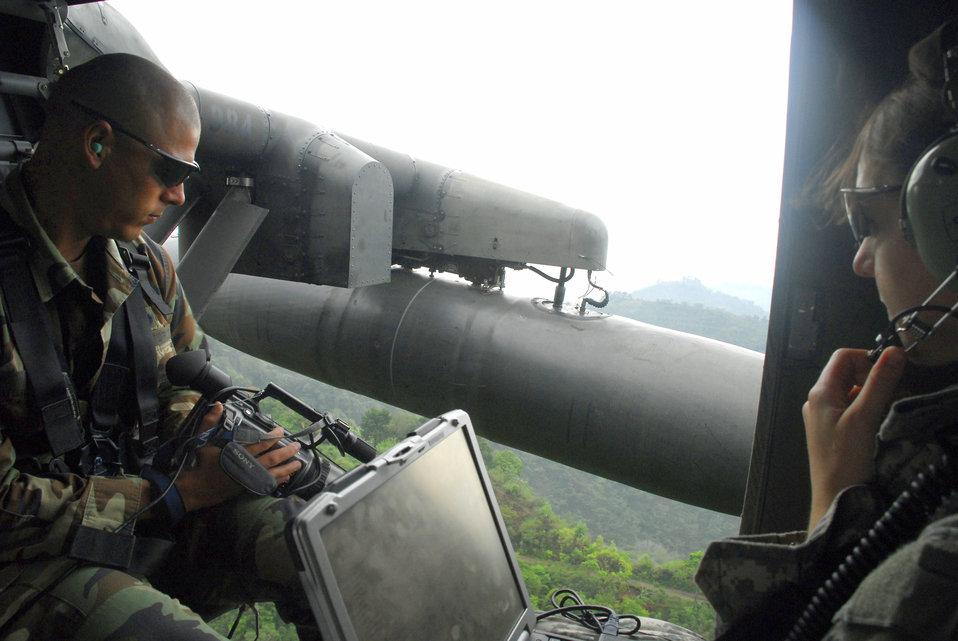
Civil engineers enhance El Salvador exercise with imagery

Tech. Sgt. Mike Vaughn and Army Capt. Sarah Williams use the automated route reconnaissance kit's from gyroscope, Global Positioning Satellite technology, digital video camera and touch-screen computer to capture imagery for use in the disaster exercise Aliadas Humanitarias 2008 May 5 inside a Joint Task Force-Bravo UH-60 Blackhawk over Compalapa Air Base, El Salvador. The regional disaster relief exercise involved military and civilian agencies from the region. Sergeant Vaughn and Captain Williams are JTF-Bravo civil engineers.